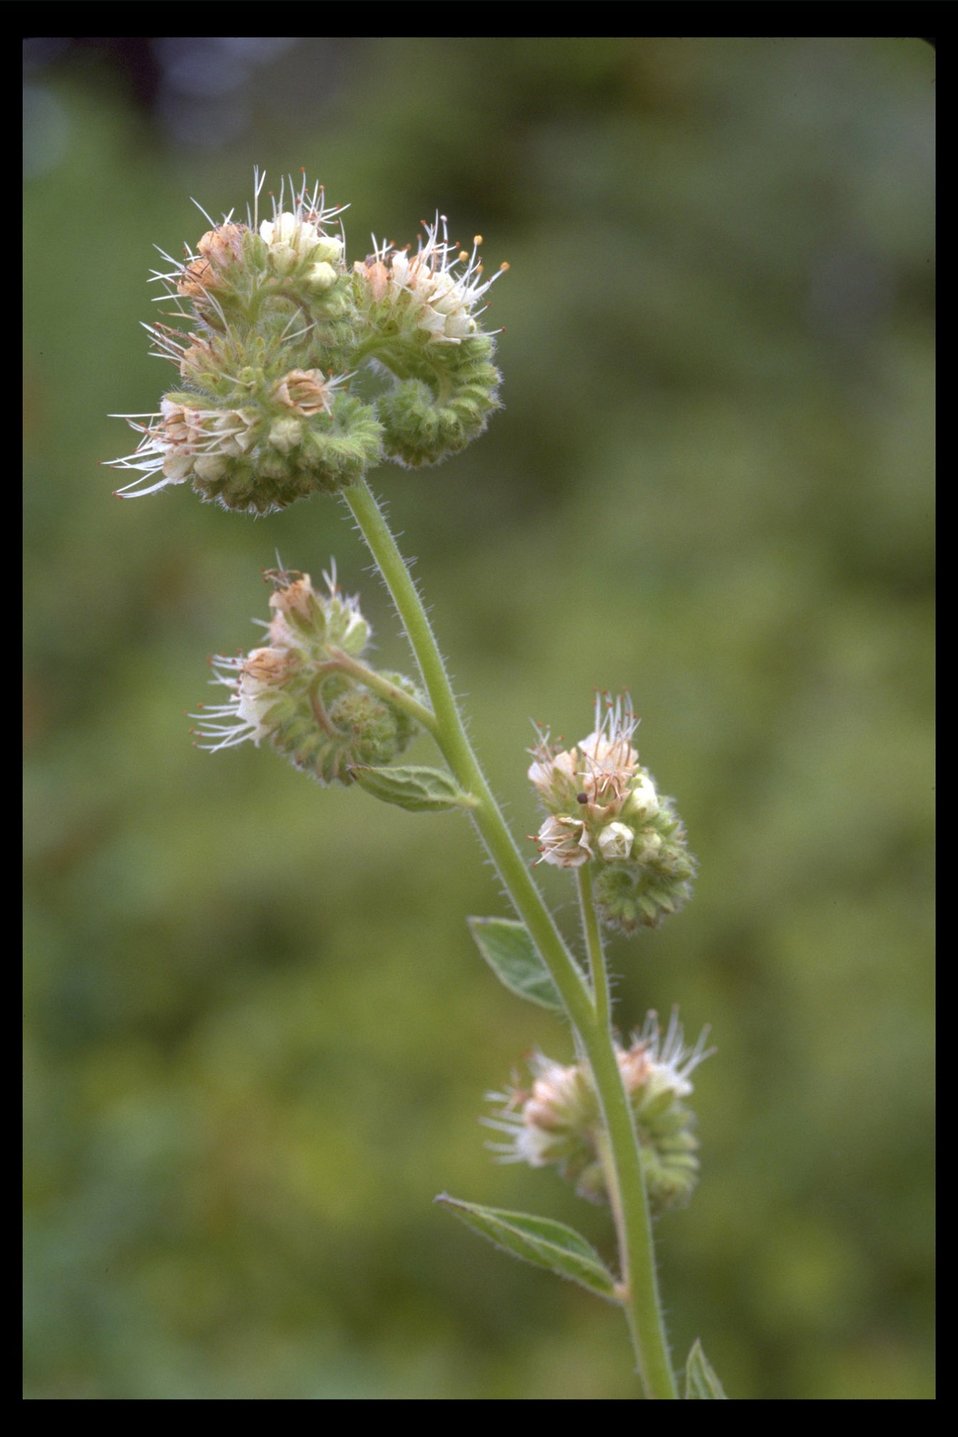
Close up of the Vari-leaf Phacelia (Phacelia heterophylla) at Shady Cove near the Rogue River.